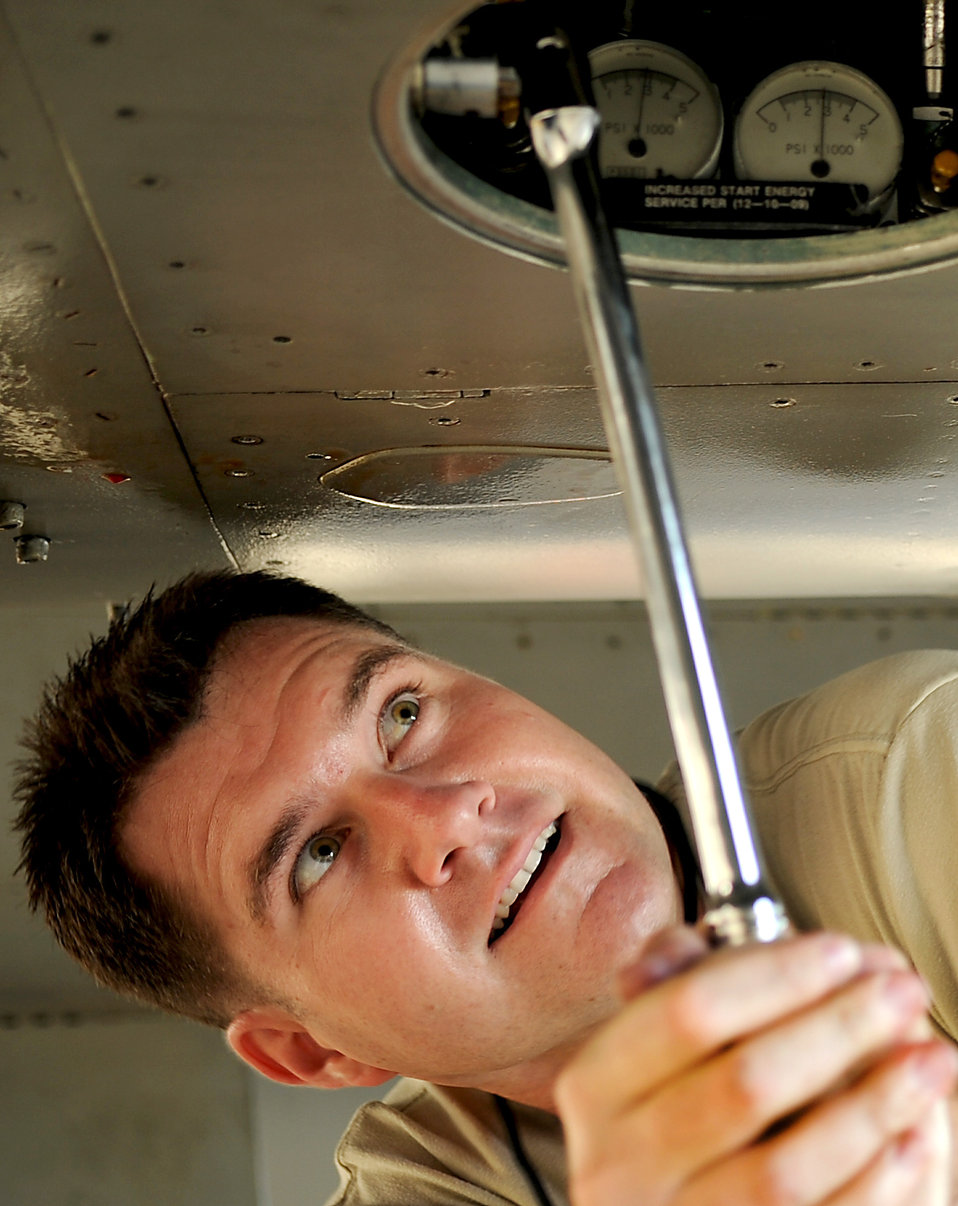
Almost finished

Master Sgt. John Bell, a production superintendent with the 67th Aircraft Maintenance Unit at Kadena Air Base, Japan, finishes installing a jet fuel starter on an F-15 Eagle.